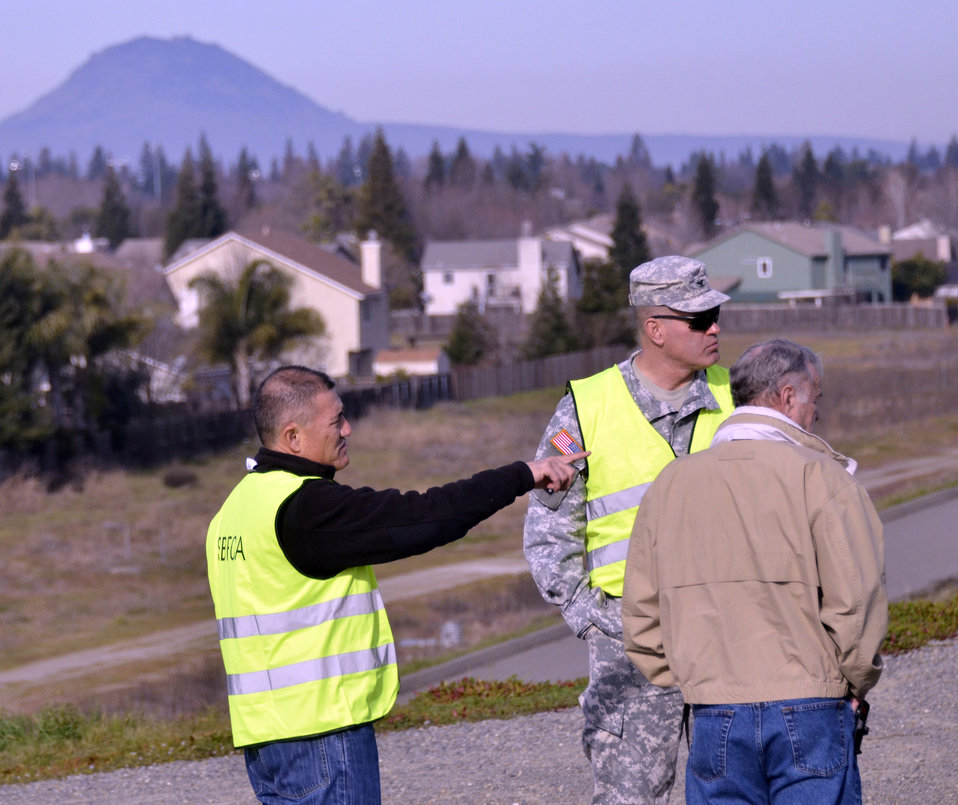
Shanghai Bend

(From left to right) Mike Inamine, executive director for the Sutter Butte Flood Control Agency; Col. Bill Leady, commander of the U.S. Army Corps of Engineers Sacramento District; and Bill Hampton, manager of the Sutter County Levee District One, view the Feather River near Shanghai Bend in Yuba City, Calif. Jan. 22, 2013. Shanghai Bend was the site of a catastrophic levee break in 1955 when Yuba City flooded and 38 residents died. Leady and the representatives toured the site of the proposed Feather River West Levee Project in Yuba City during the visit. This SBFCA project aims to provide 200-year flood protection for Biggs, Gridley, Live Oak and Yuba City plus 100-year flood protection for the rural area of the river basin south of the four townships.